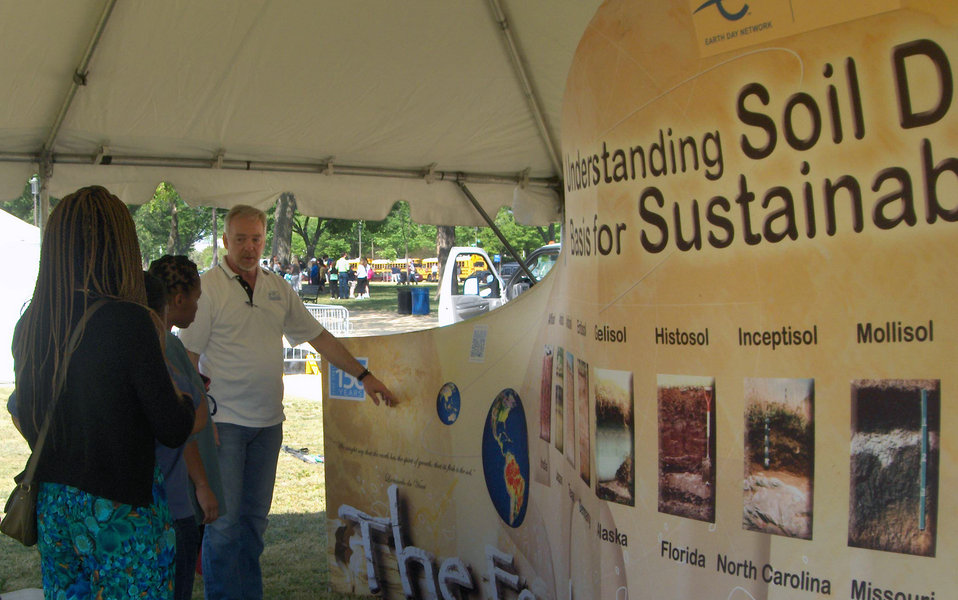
Visitors come to view the U.S. Department of Agriculture (USDA) Natural Resources Conservation Service (NRCS) display for Earth Day 2012 on the National Mall in Washington, D.C., on Sunday, April 22, 2012.